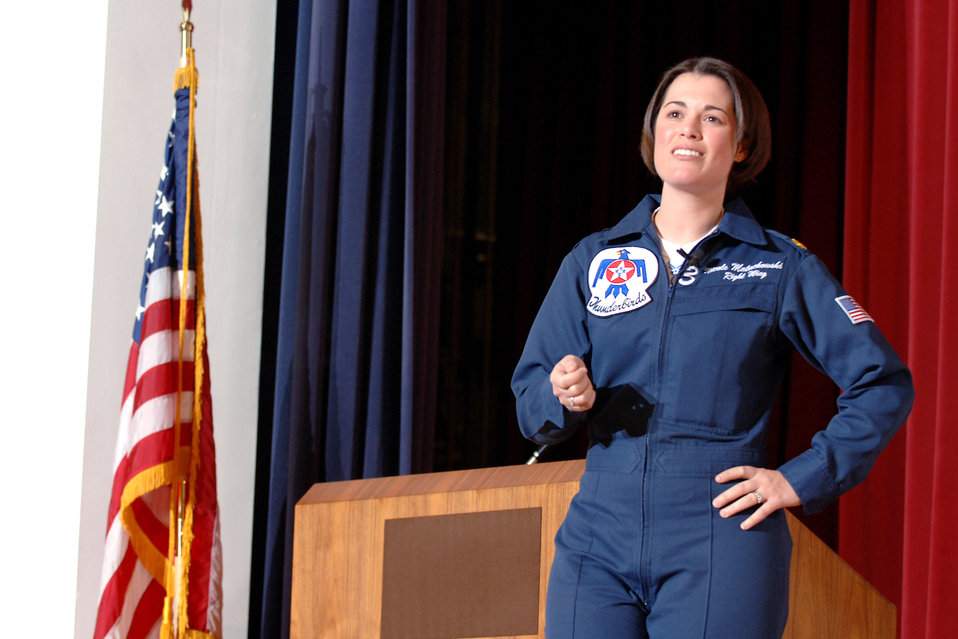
Thunderbird pilot talks to cadets on importance of teamwork

Major Nicole Malachowski an Air Force Thunderbirds Aerial Demonstration Team pilot gives a speech at the Air Force Academy's 14th Annual National Character and Leadership Symposium March 1 in Colorado Springs, Colo. Major Malachowski, a 1996 academy graduate, spoke to academy cadets and local area highschool students about teamwork and diversity in the Air Force.